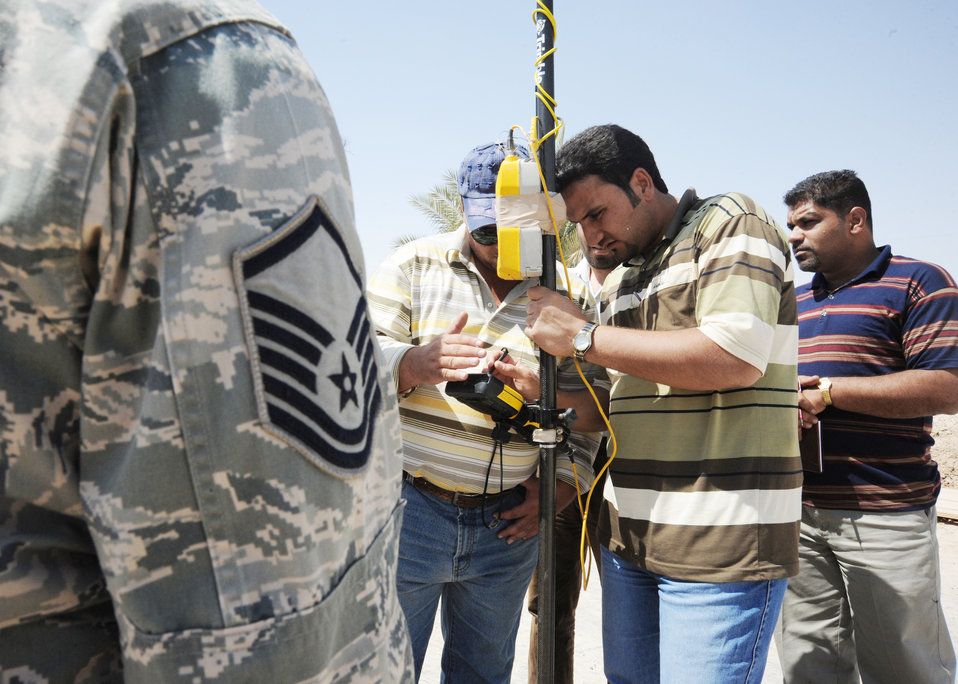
Civil engineers assist with Iraq drawdown

Air Force Master Sgt. Varoujan Garabedian stands by ready to assist the Iraqi field and engineering team as they learn how to input data into the global positioning station controller April 19, 2010, at Al Asad Air Base, Iraq. Sergeant Garabedian is an engineering assistant for 732nd Expeditionary Prime Beef Squadron.